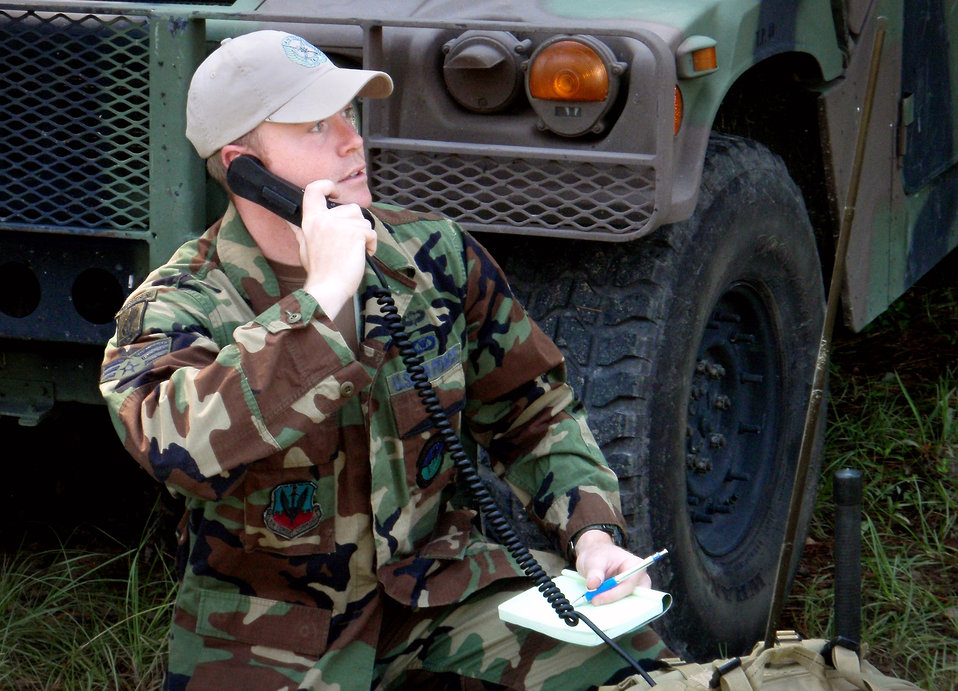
JTAC Airman brings target strike experience to hurricane response

Senior Airman Gabe provides satellite radio communications for the Cameron Emergency Operations Center damage assessment team at the Prairie Wildlife Center in Cameron, La. Airman Bird is assigned to the 122nd Air Support Operations Squadron in New Orleans. Airman Bird is a joint terminal attack controller.